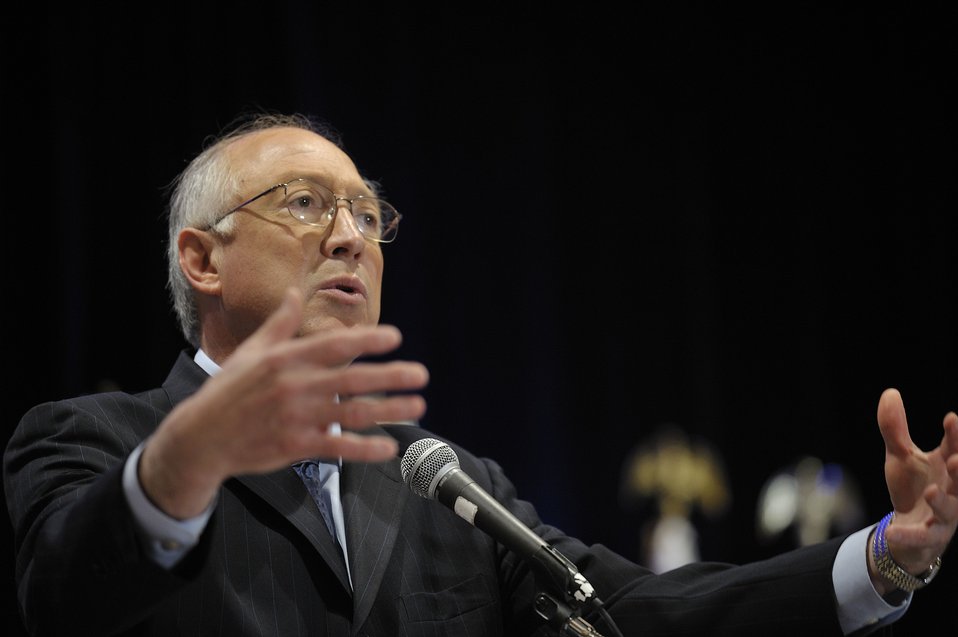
Tribal Energy Summit

Secretary Salazar delivers Keynote Address on the afternoon of May 5th.